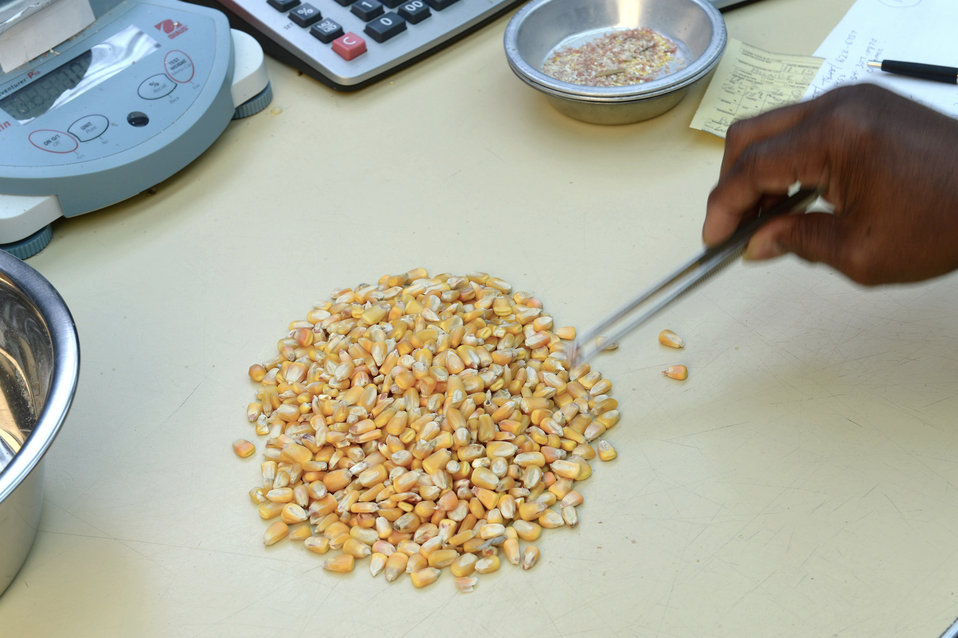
A U.S. Department of Agriculture (USDA) Grain Inspection, Packers and Stockyards Administration (GIPSA) Federal Grain Inspection Service (FGIS) scientist tests corn at the FGIS inspection laboratory in New Orleans, LA on Monday, Nov. 18, 2013.